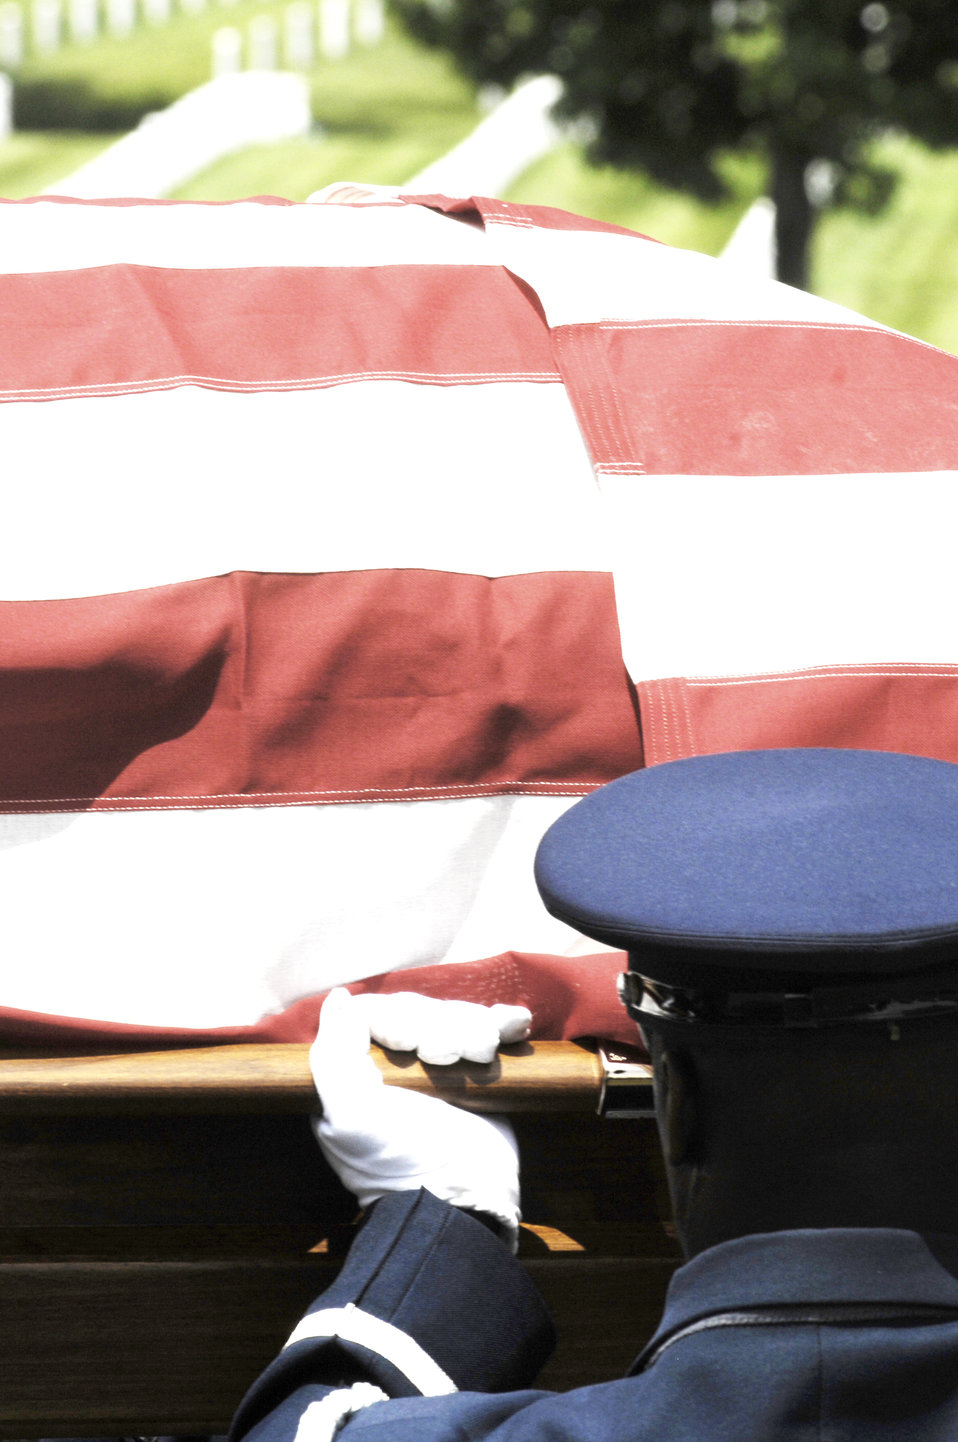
The last to let you down

A United States Air Force Honor Guard body bearer lifts a casket to honor a fallen Airman during a full-honors funeral ceremony at Arlington National Cemetery. Honor Guard body bearers train constantly to maintain the precision they are known for. Their standards of flawlessness are set out of necessity to honor fallen Airmen.